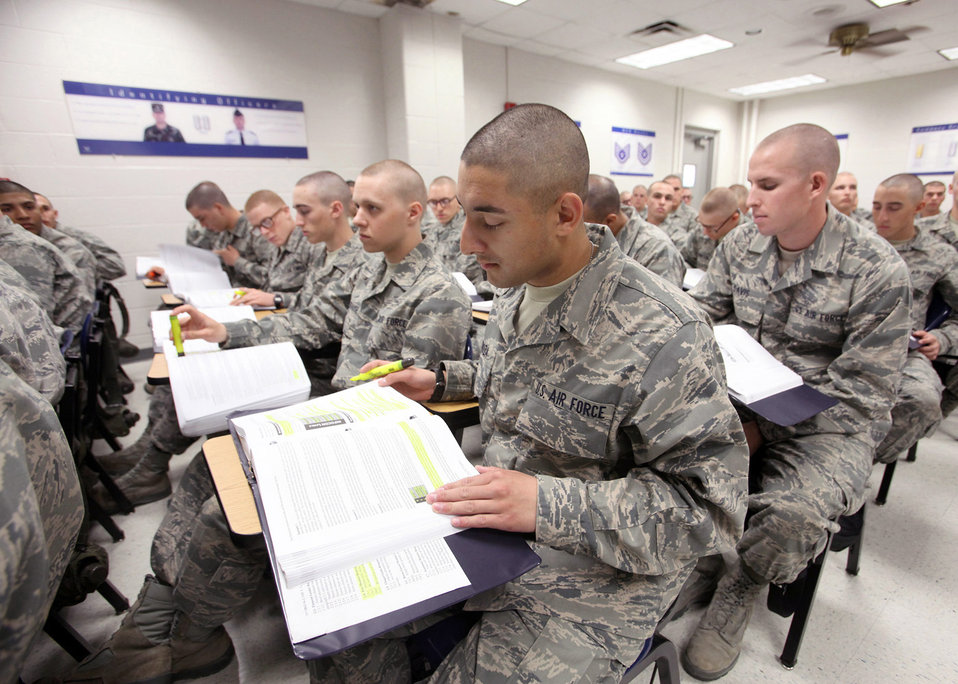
BMT begins cyber training1

Students in Air Force basic military training learn about defending cyberspace during a training class Oct. 8, 2010. The course teaches basic operating fundamentals on the Air Force network and the significance of protecting the network to meet the Air Force mission.